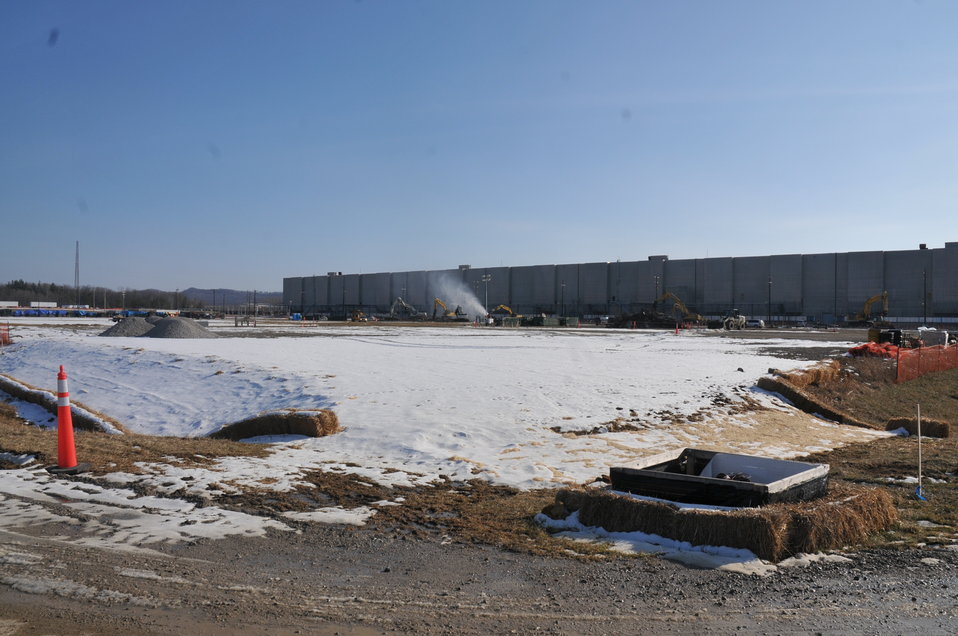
Recovery Act Project Clears Portsmouth Switchyard, Benefits Community through Recycling

A view of the X-533 Electrical Switchyard after demolition.